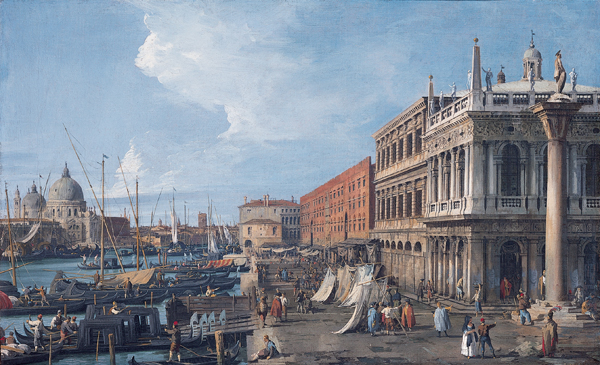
'The Molo, Venice', oil on canvas painting by Canaletto